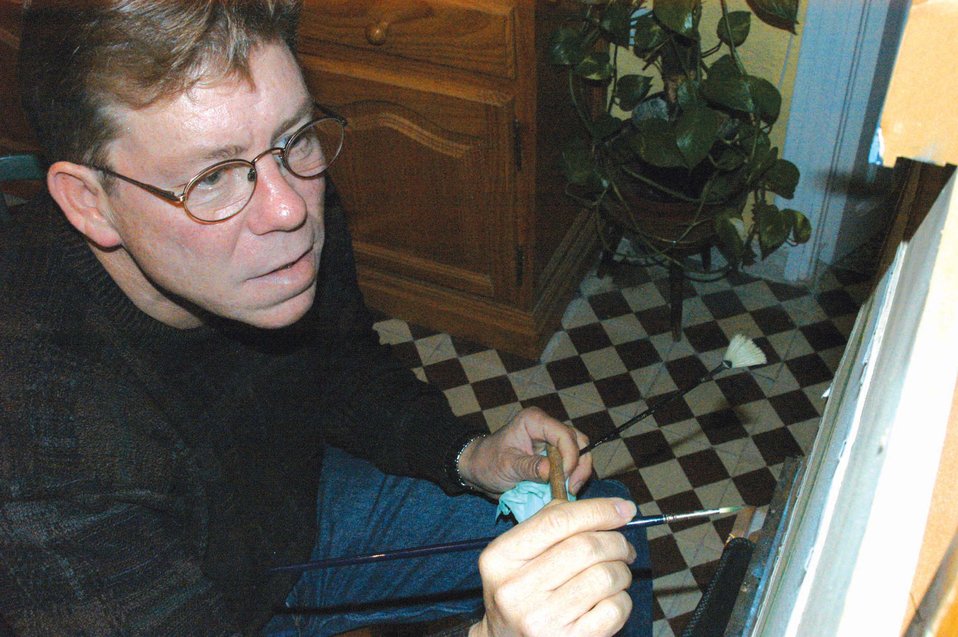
Master of art

CHIPIONA, Spain -- Master Sgt. Jeffery Kunkle paints a landscape in watercolor at his home. He recently had a showing of his art at a local art gallery. Sergeant Kunkle is the quality assurance inspector for the 725th Air Mobility Squadron in Rota.